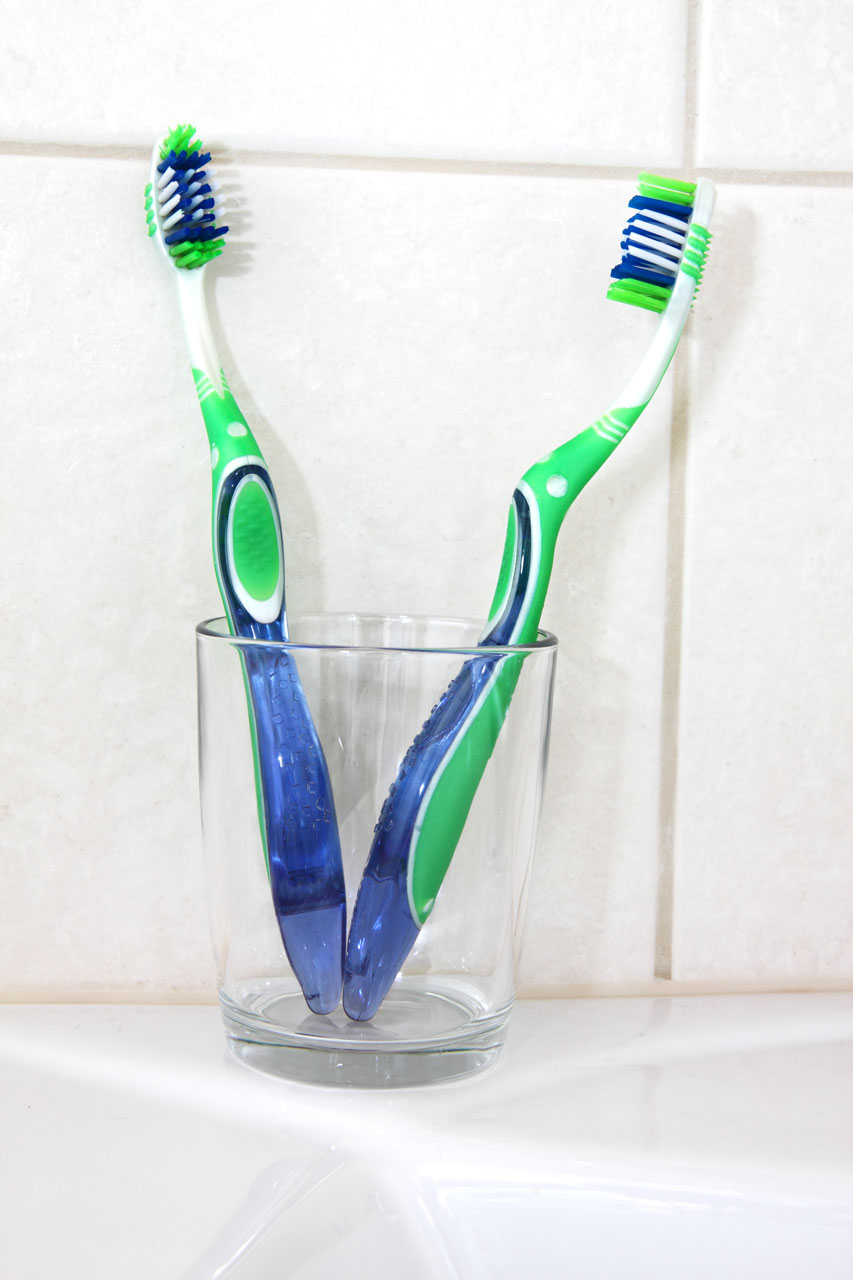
Toothbrushes in a glass.